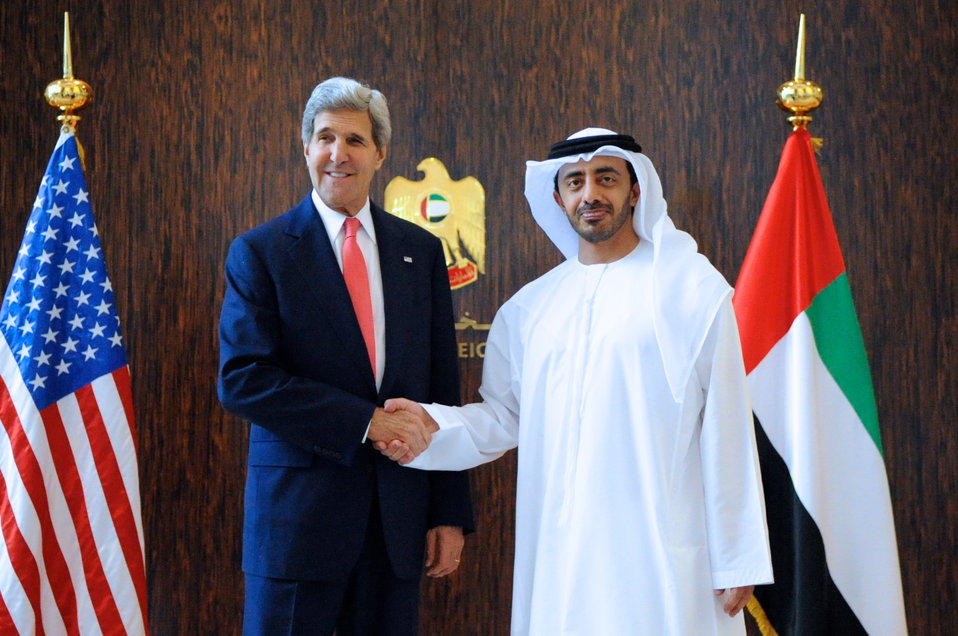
Secretary Kerry is Greeted by UAE Minister of Foreign Affairs Al Nayhan

UAE Minister of Foreign Affairs Abdullah bin Zayed Al Nayhan shakes hands with U.S. Secretary of State John Kerry in the Ministry of Foreign Affairs before a meeting in Abu Dhabi, United Arab Emirates, on November 11, 2013.